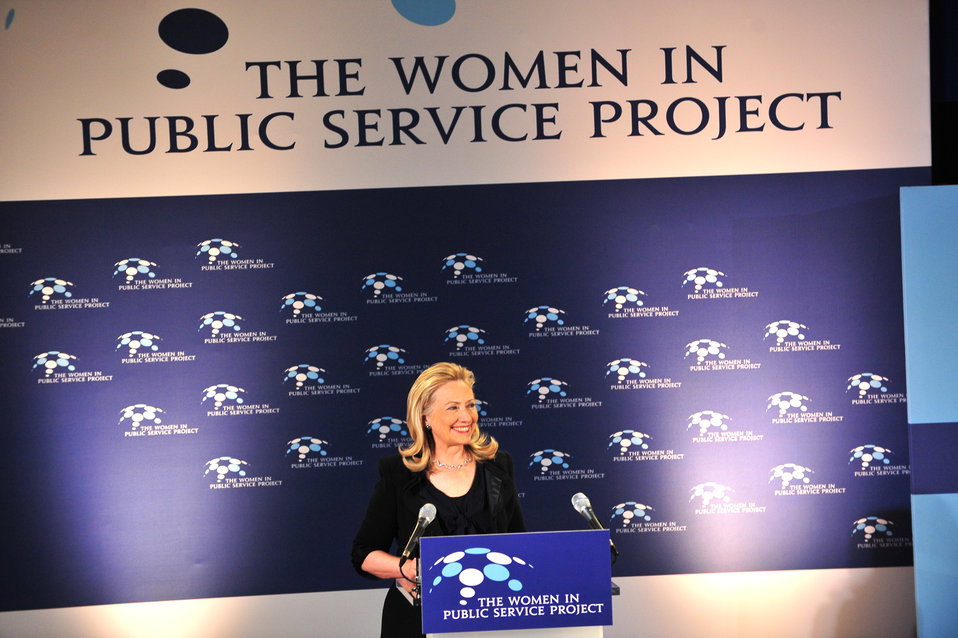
Secretary Clinton Delivers the Keynote Address at Inaugural Women in Public Service Colloquium

U.S. Secretary of State Hillary Rodham Clinton delivers the keynote address at the Inaugural Women In Public Service Colloquium, at the U.S. Department of State in Washington, D.C., on December 15, 2011.